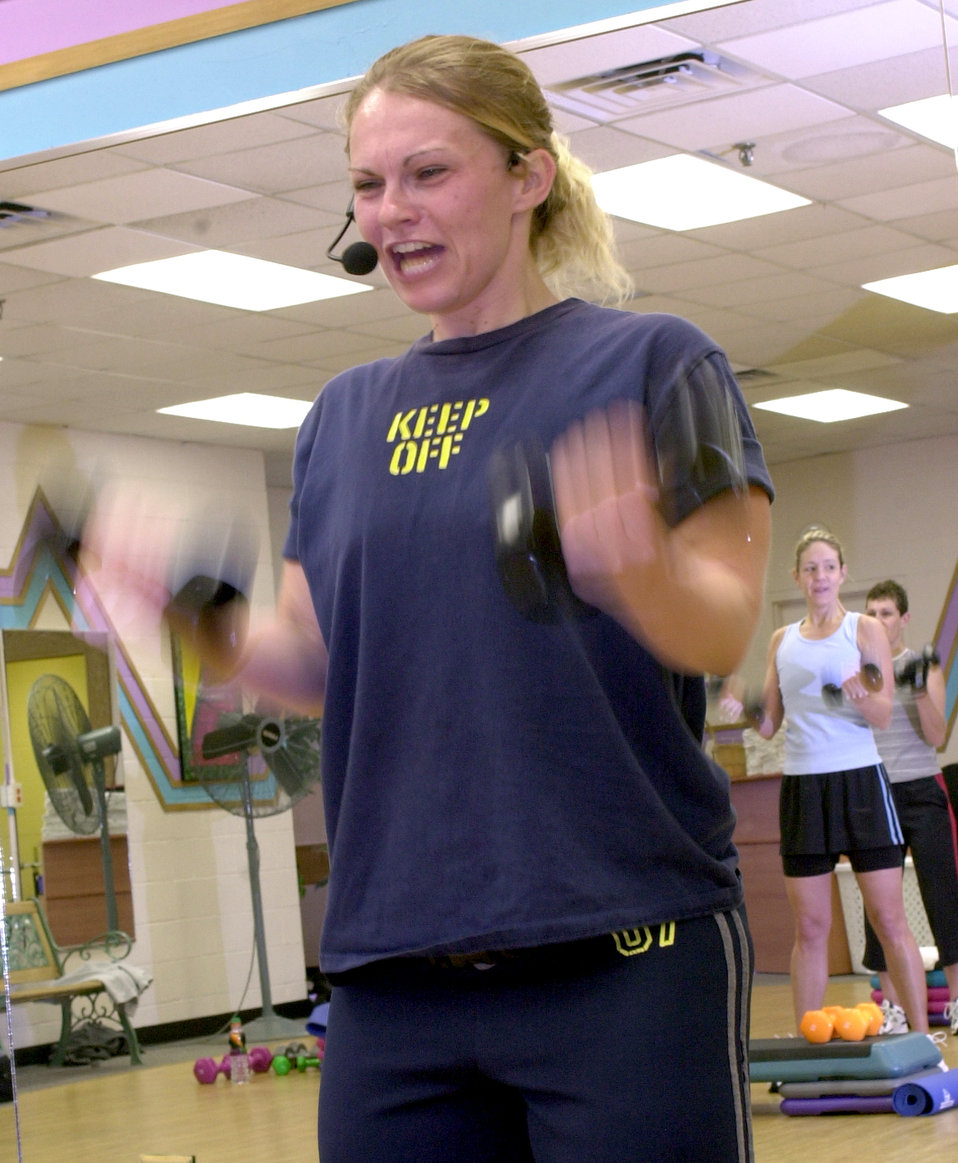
Fitness instructor loses nearly half of herself

SEYMOUR JOHNSON AIR FORCE BASE, N.C. -- Quick repetitions of a variety of weights is an integral part of to one of Keyra Donaldson's fitness classes. She lost 115 pounds since 2000.